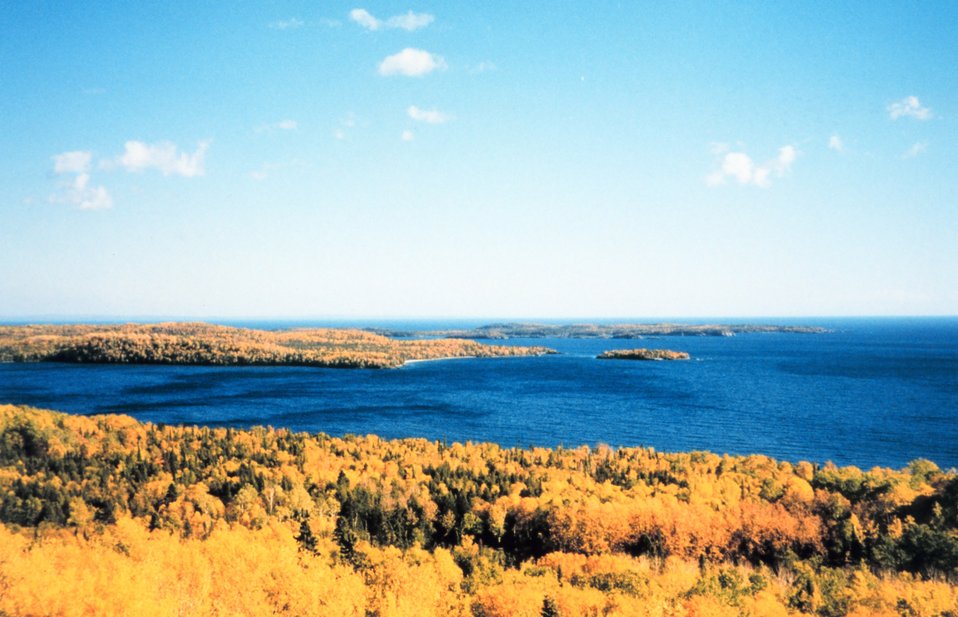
Houghton County